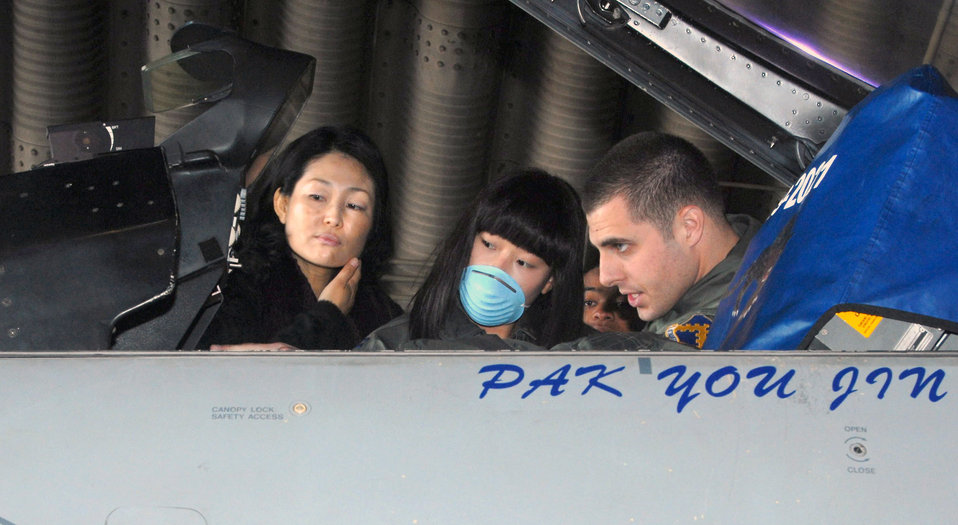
Lifesaving Airman, patient meet for first time

First Lt. Brad Brizek shows You Jin Pak the inteirior of an F-16 Fighting Falcon Nov. 21 at Kunsan Air Base, South Korea. An 8th Security Forces Squadron member donated AB negative blood, which is rare among the South Korean population and specifically for Ms. Pak. The blood he donated ultimately saved her life. Lieutenant Brizek is assigned to the 35th Fighter Squadron.